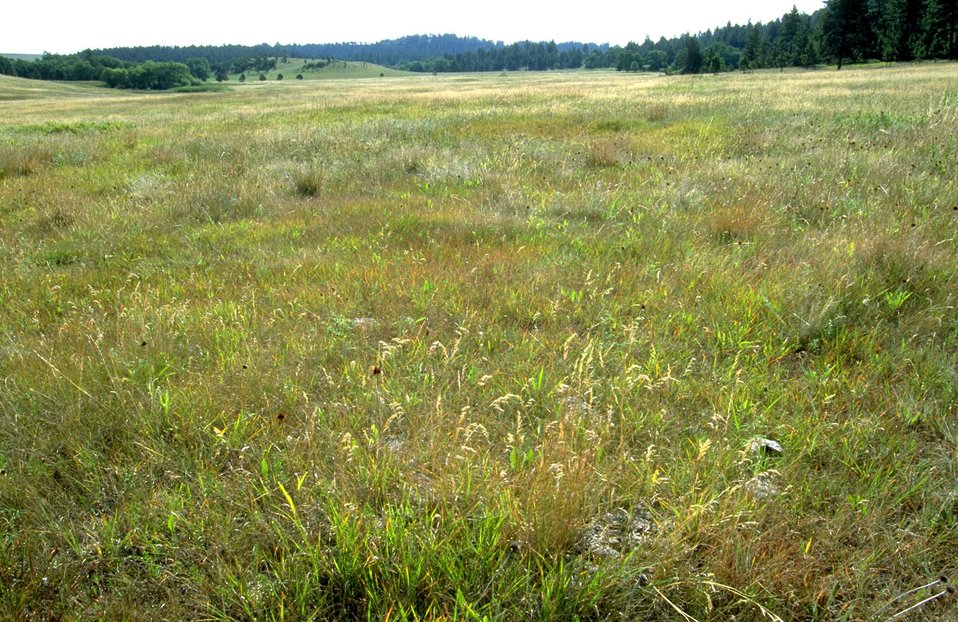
Vegetation